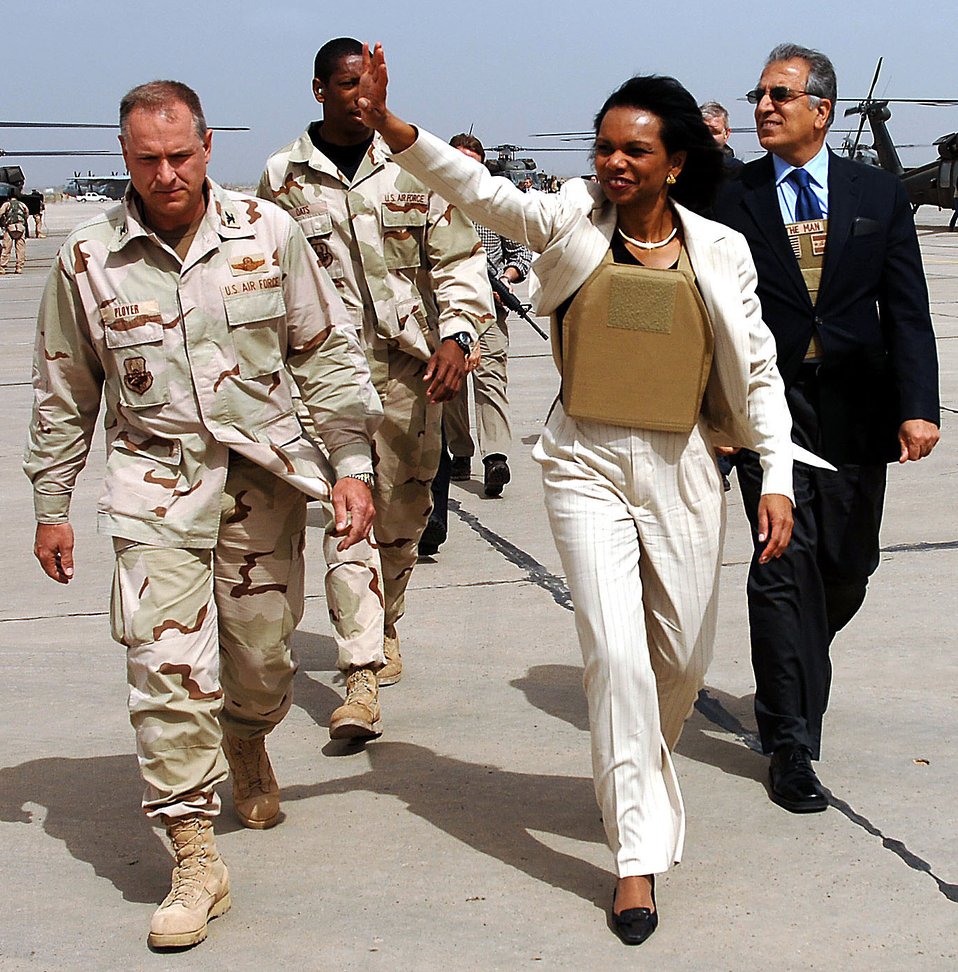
Secretary of State visits Iraq

U.S. Secretary of State Condoleezza Rice waves to Airmen at Sather Air Base, Iraq, on Monday, April 3, 2006 after she and Jack Straw, United Kingdom foreign secretary, met with Iraqi officials in Baghdad. She is accompanied by Col. Dennis Ployer, 447th Expeditionary Group commander, and Zalmay Khalilzad, U.S. ambassador to Iraq.